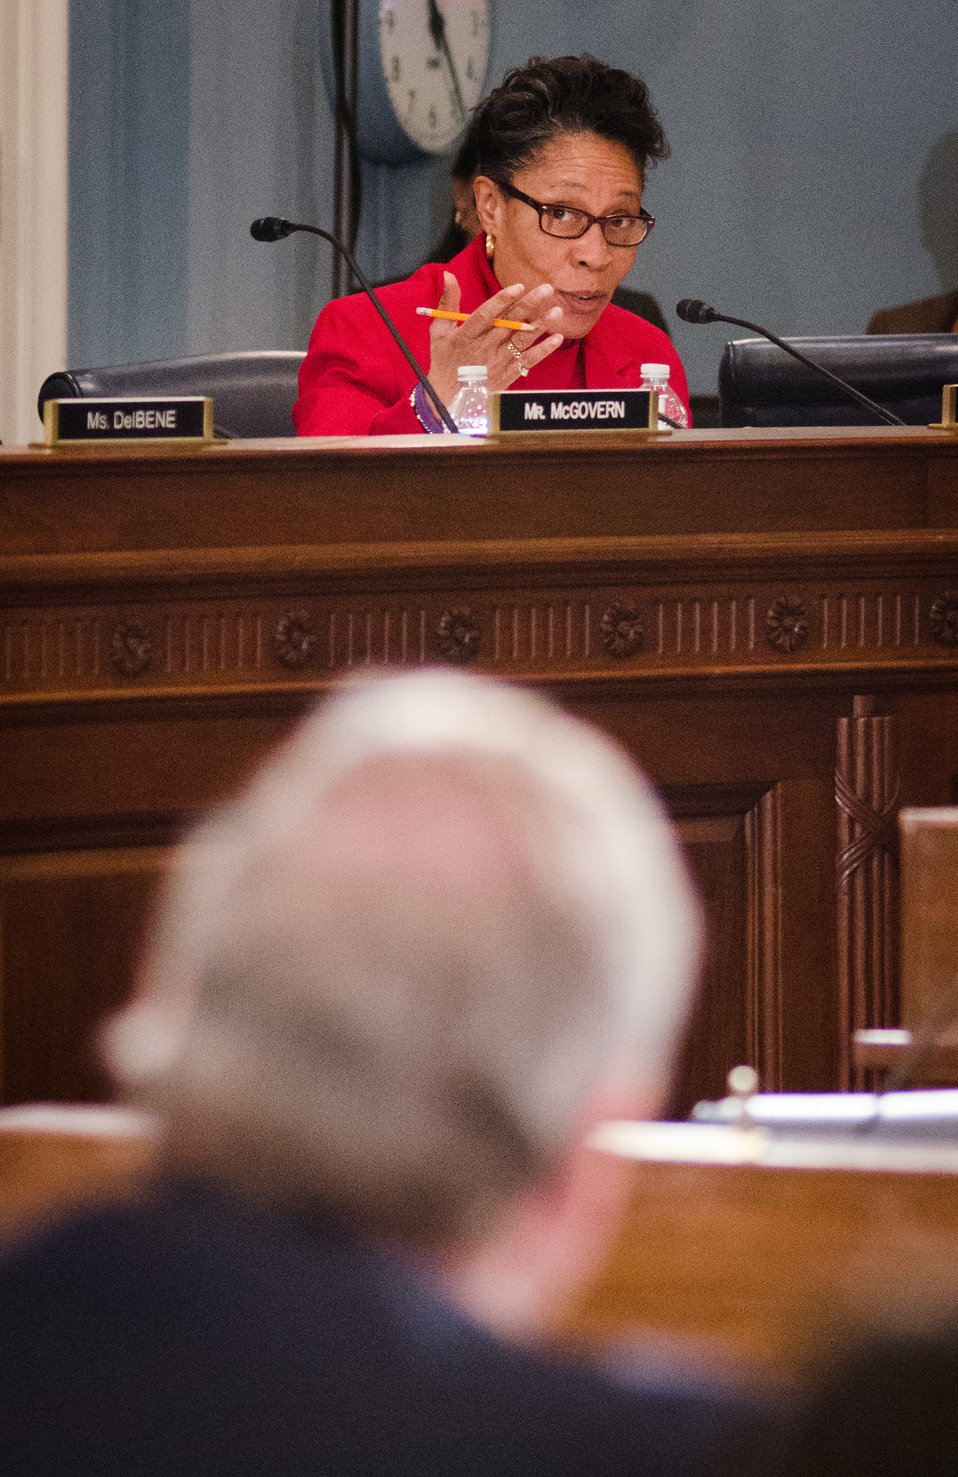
Representative Marcia Fudge (OH) questions Agriculture Secretary Tom Vilsack, during his testimony before the House Agriculture Committee regarding the “State of the Rural Economy“ at the Longworth House Office Building in Washington, D.C. on Tuesday, Mar. 5, 2013.